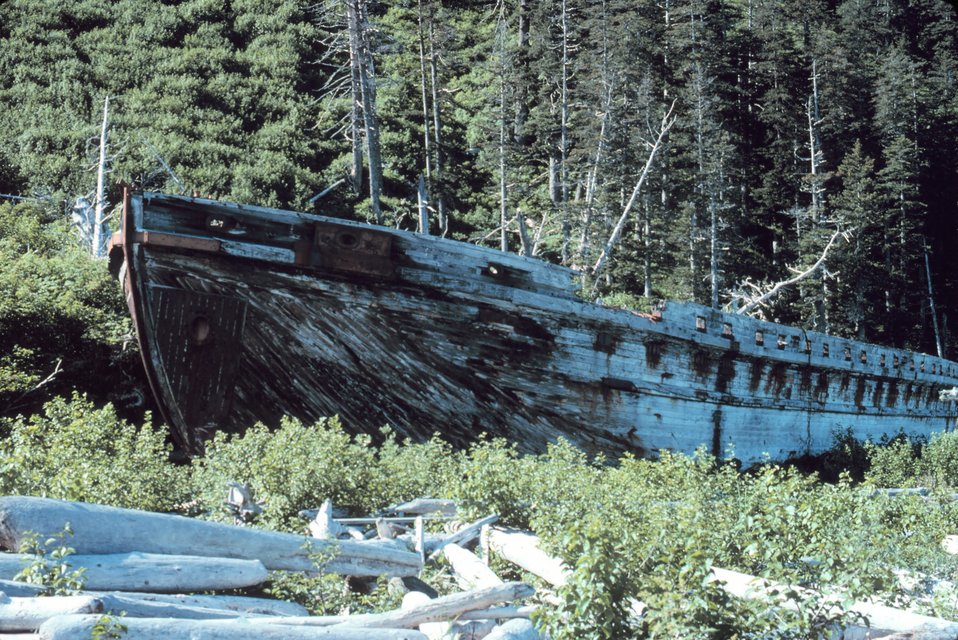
An old wooden ship cast ashore.